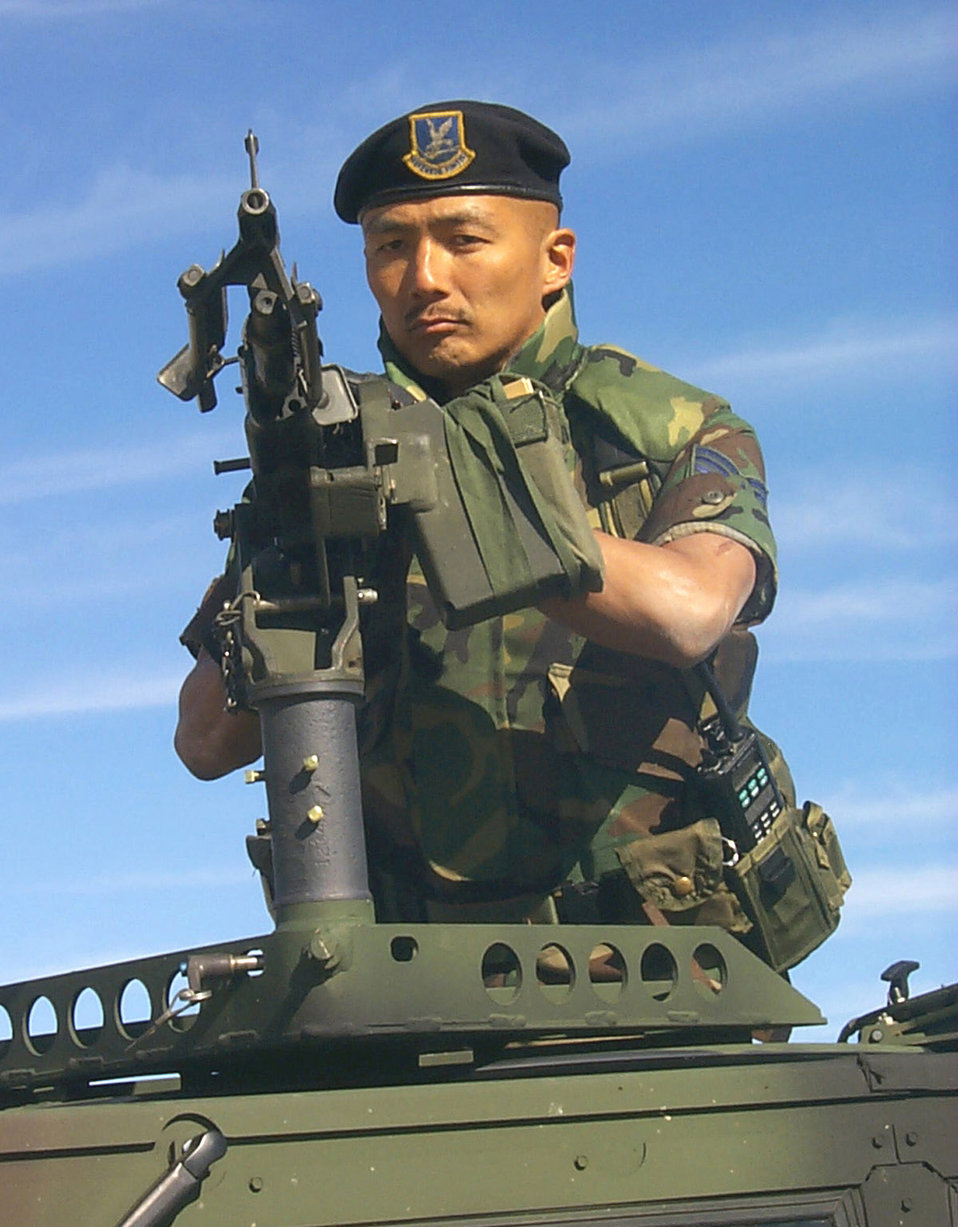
Activated Gunner

OPERATION NOBLE EAGLE -- Tech. Sgt. Jay Huey, a reservist from the 95th Security Forces Squadron at Edwards Air Force Base, Calif., stands ready at the M-160 machine gun mounted atop a humvee at the Edwards South Gate. Huey is one of more than 50 activated reservists serving at Edwards in support of Operations Noble Eagle and Enduring Freedom.